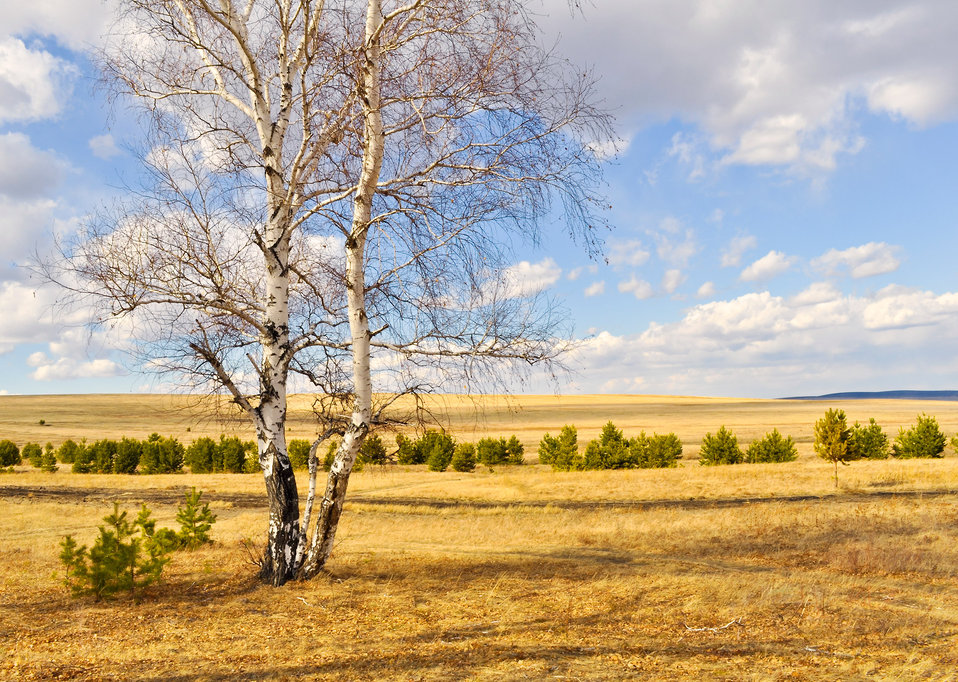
Birch trees

Landscape with birches.